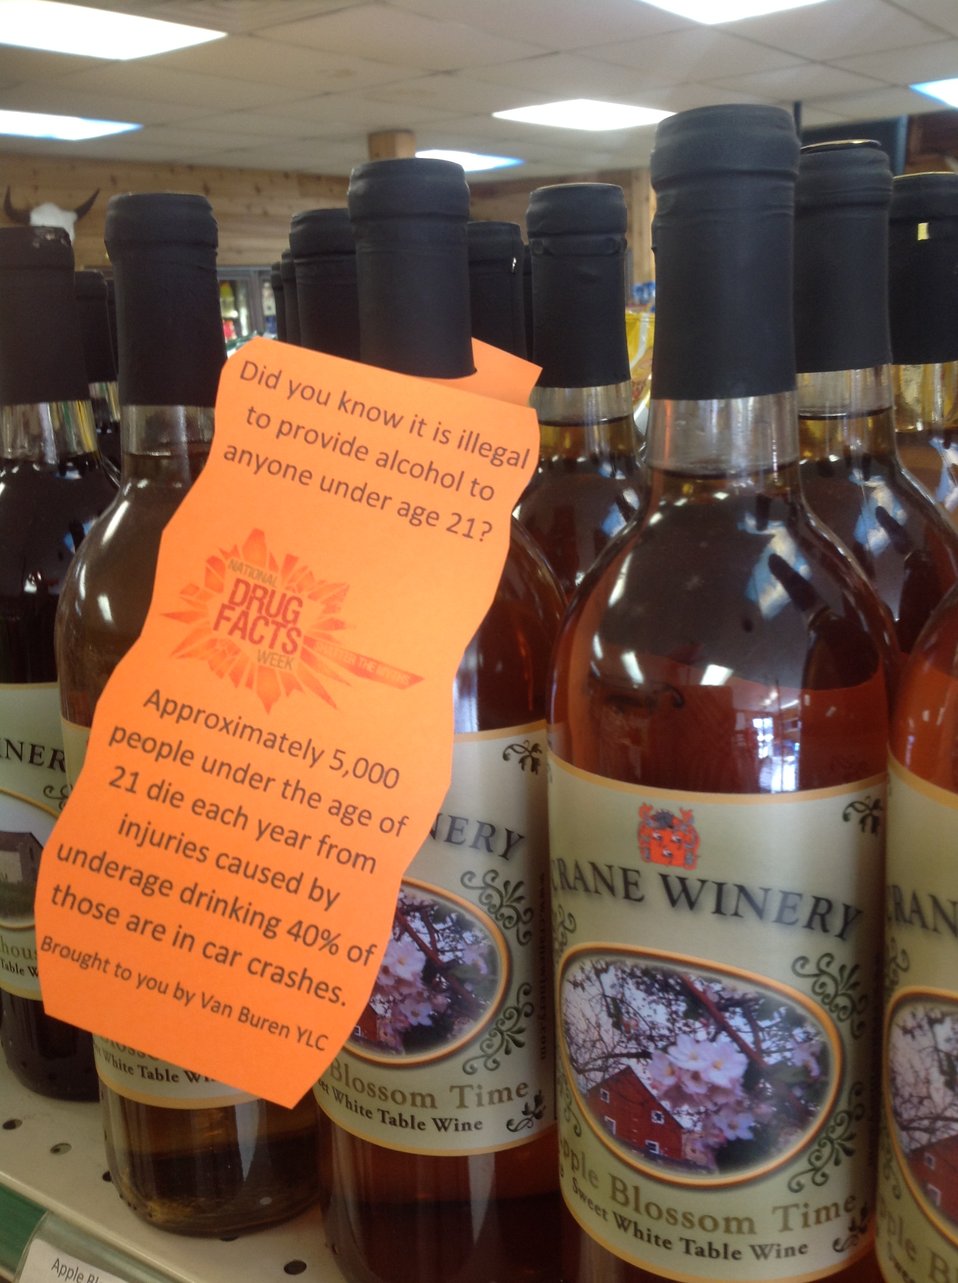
Getting the Word Out

Teenagers from the Van Buren County SAFE Coalition's, Youth Leadership Council (YLC) in Keosauqua, Iowa participate in various events during National Drug Facts Week, 2014.